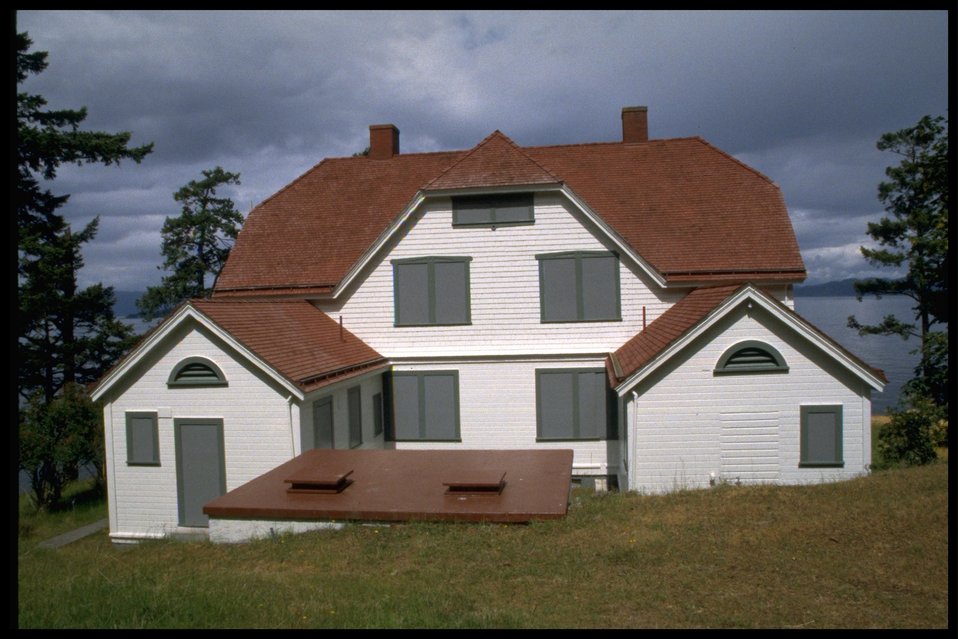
Living quarters at Turn Point. One in a series of ten shots of the living quarters.